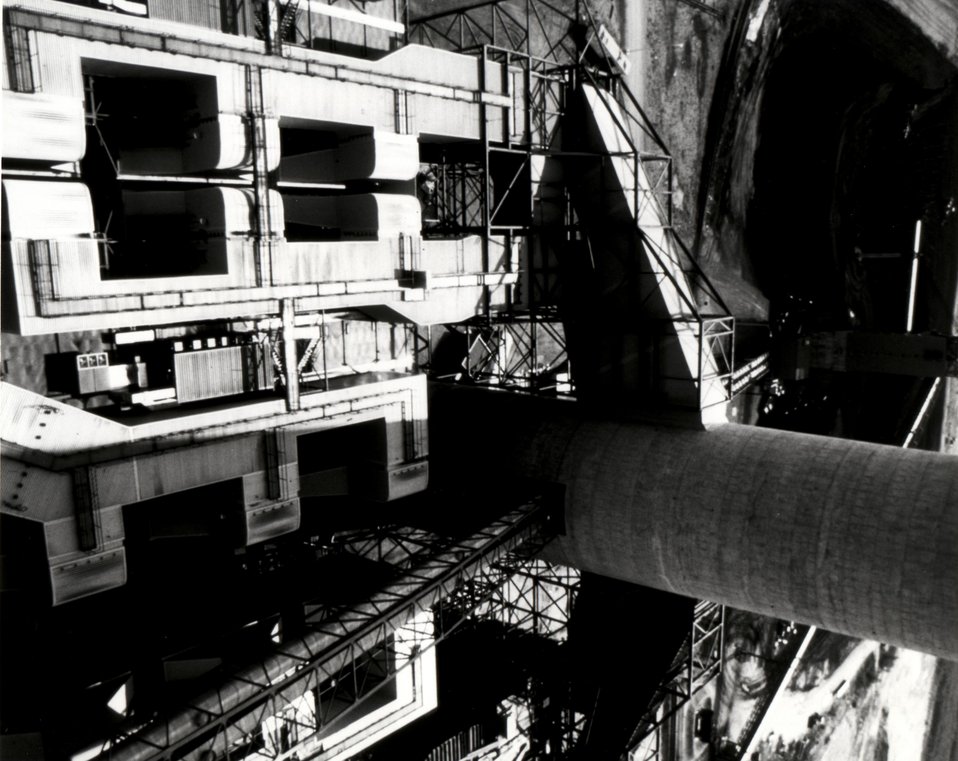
The Rush Island Coal-Fired Power Plant located on the west bank of the Mississippi River near St. Loius. Circa 1979.